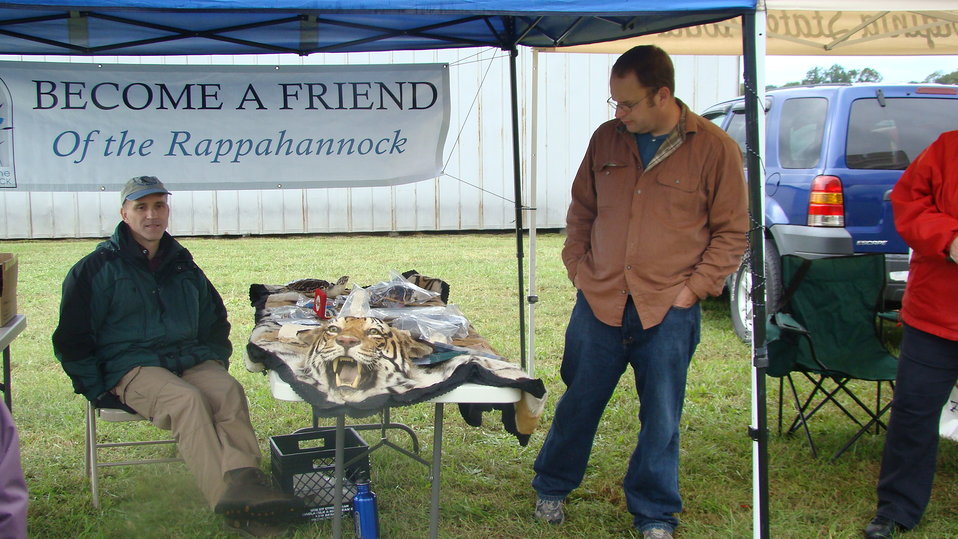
Rappahannock River Valley NWR 15th Anniversary

USFWS Office of Law Enforcement display at 'Go Wild!'.